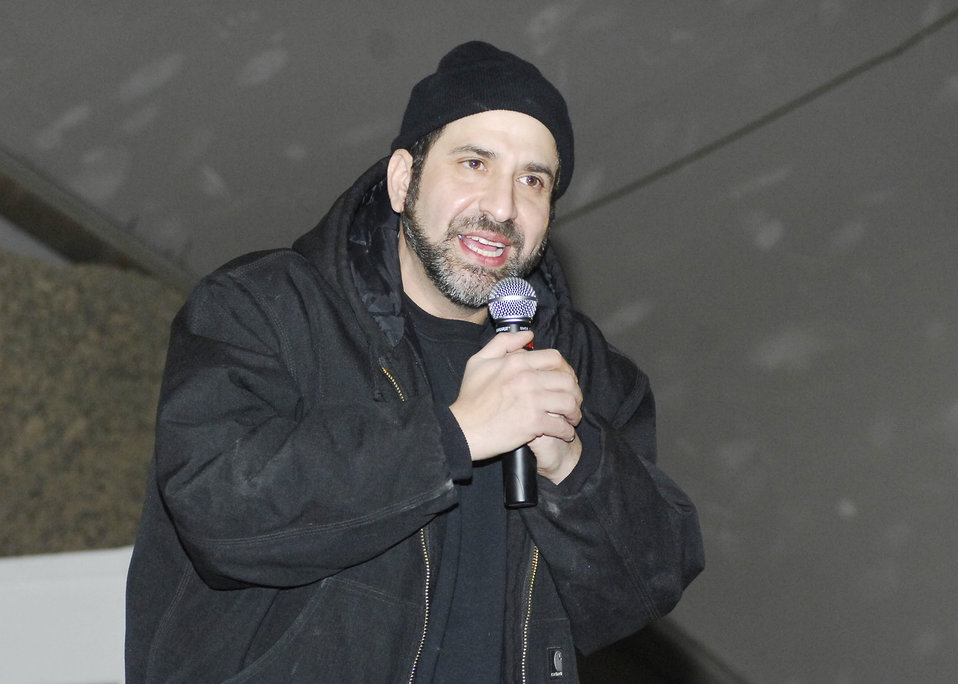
USO brings celebrities to Servicemen and women

Dave Attell entertains the Airmen, Soldiers, Sailors and Marines at Bagram Airfield, Afghanistan, during a United Service Organization tour Dec. 15, 2009. Mr. Attell, Billy Ray Cyrus, Anna Kournikova and Nick Bollettieri are featured in an USO tour boosting the morale of deployed servicemembers. Mr. Attell is a comedian originally from Queens, N.Y.